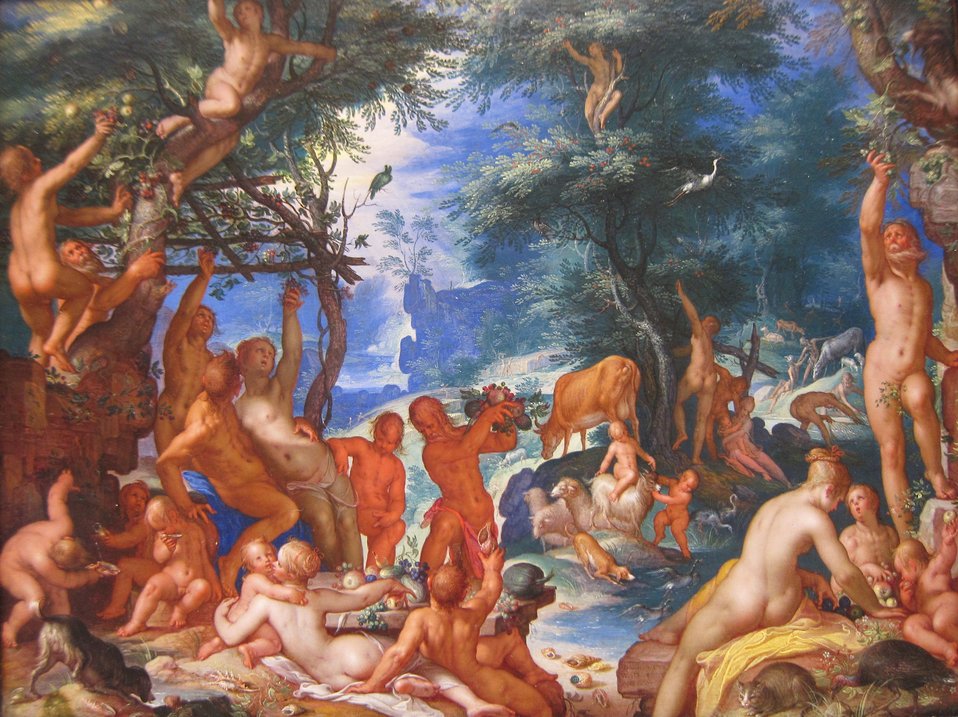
'The Golden Age', oil on copper painting by Joachim Wtewael, 1605, Metropolitan Museum of Art